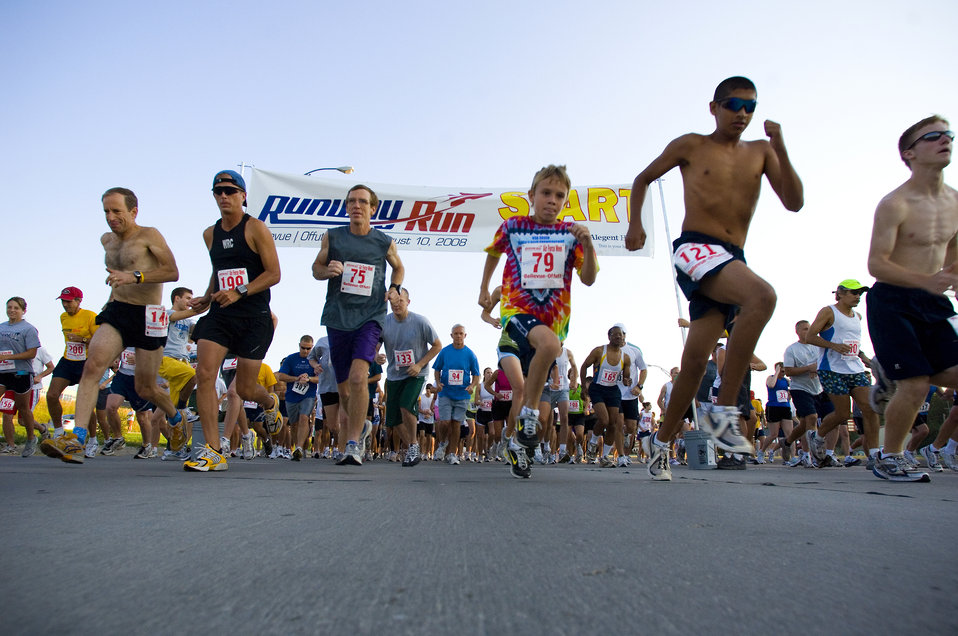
Runners get fit to fight during Air Force Week in the Heartland

Nearly 250 participants take off from the starting gate Aug. 10 for the seven-mile Bellevue/Offutt Runway Run during Air Force Week in the Heartland supported by Offutt Air Force Base, Neb. The week is designed to broaden awareness of the Air Force's role in the war on terrorism and strengthen support for Airmen serving worldwide in defense of freedom.